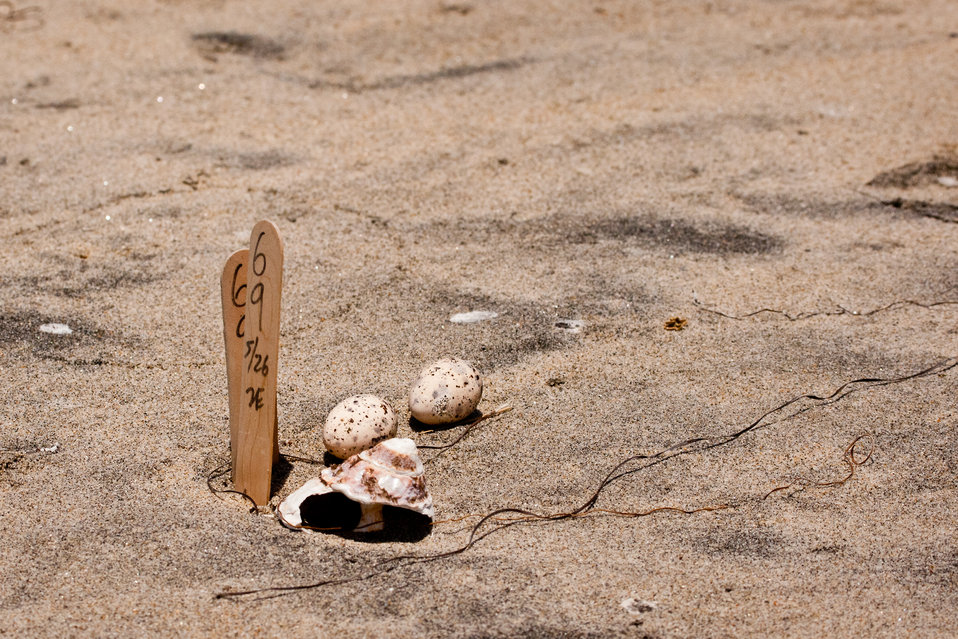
Nest markers

Tongue depressor sticks are used to mark each nest for snowy plover and california least tern nests, so that they can be monitored at each patrol the biologists embark on. Sometimes it is interesting to see which sticks stay put within the dunes through the following season